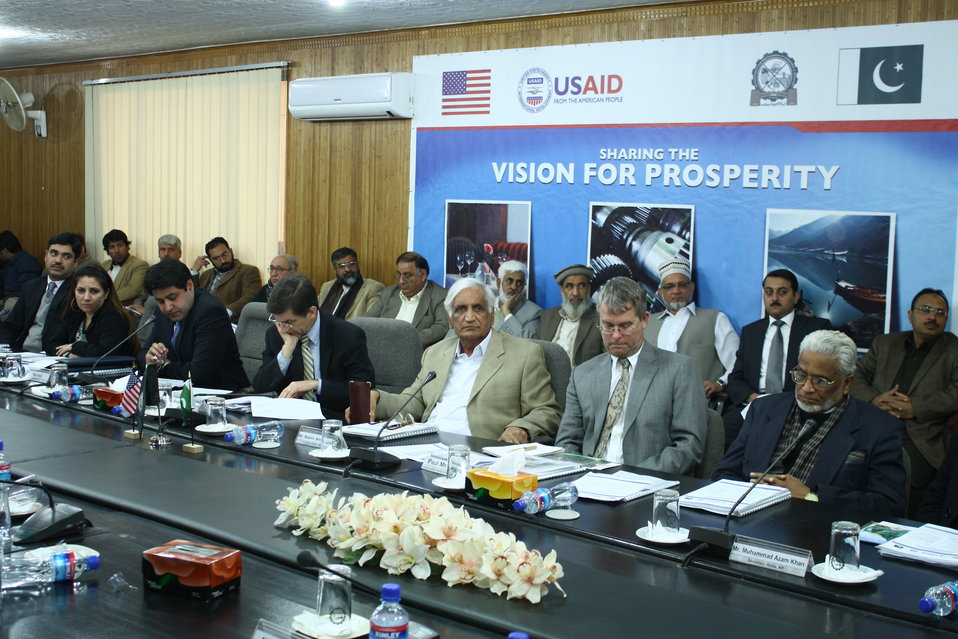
USAID Joins Hands with KPPCI to Develop a Roadmap to Promote Tourism and Industry in KPK - 1

Presentations on the two vision documents, as well on USAID’s role in setting up an Investment Promotion Council for KP and FATA were made during the ceremony.